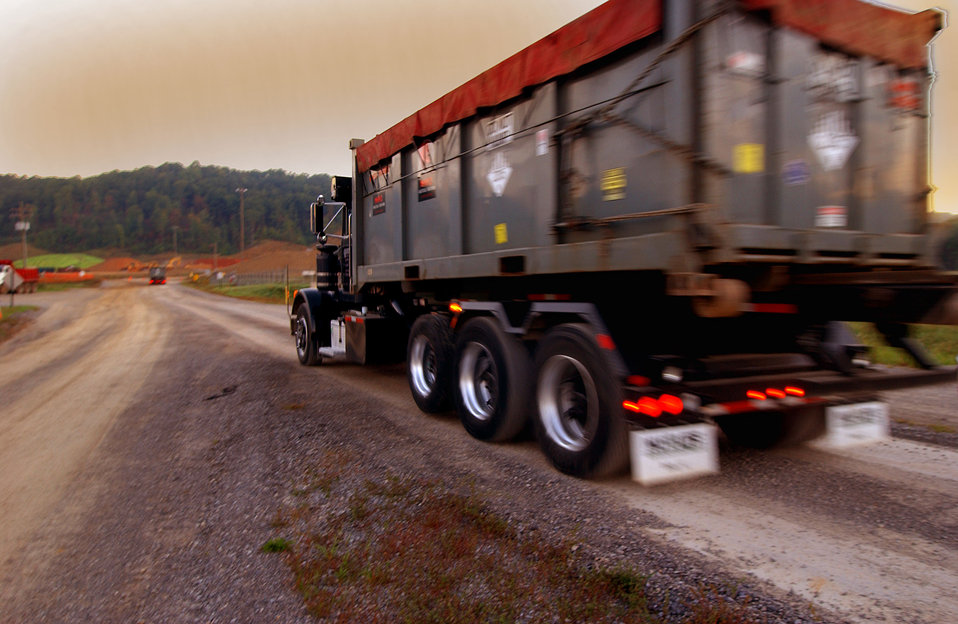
Truck hauling waste at the Environmental Management Waste Management Facility Oak Ridge

04-245-48 DOE photo by Lynn Freeny
Truck hauling waste at the Environmental Management Waste Management Facility Oak Ridge Tennessee 2004